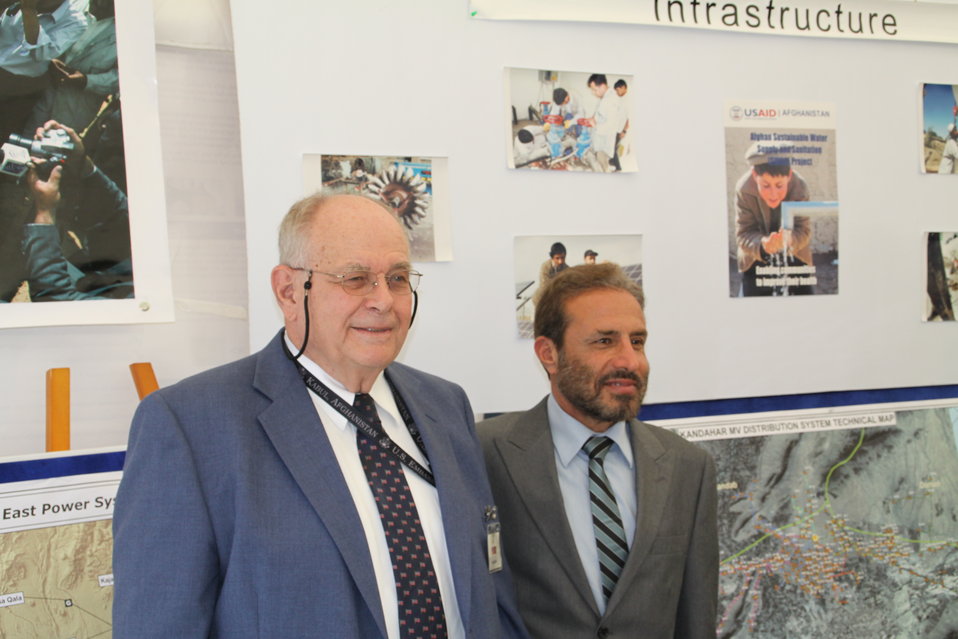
Kabul Official July 4th Celebration